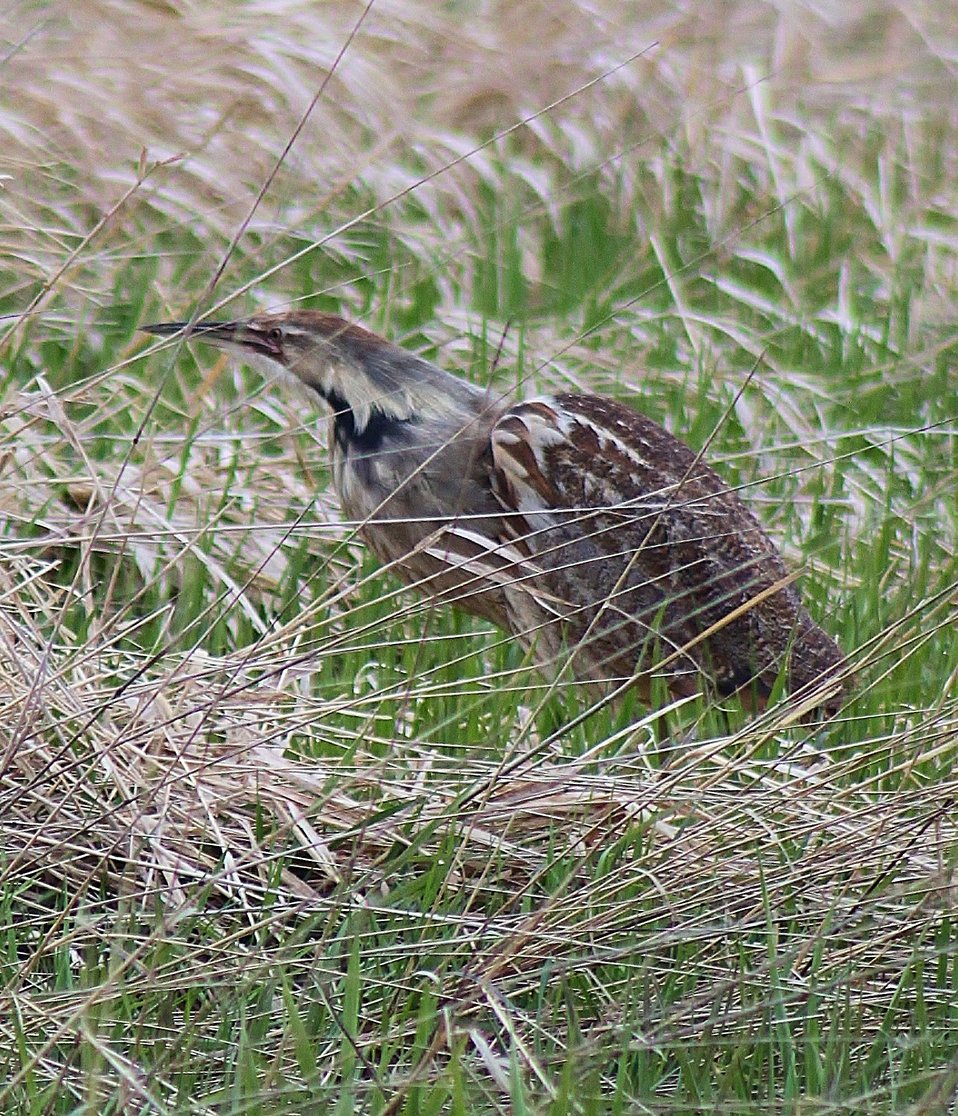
American Bittern at the Missisquoi National Wildlife Refuge